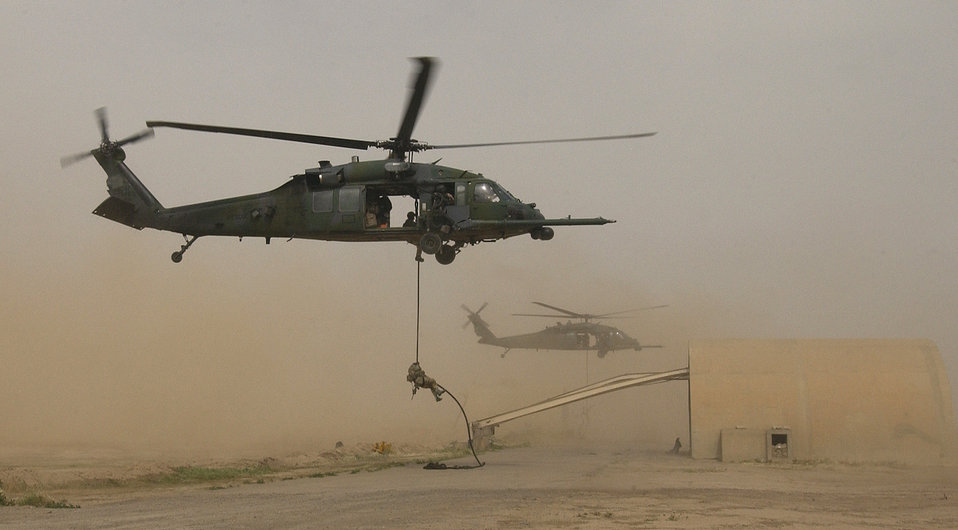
Drop zone

BALAD AIR BASE, Iraq -- An Air Force pararescueman drops from an HH-60G Pave Hawk helicopter assigned to the 64th Expeditionary Rescue Squadron on March 30.